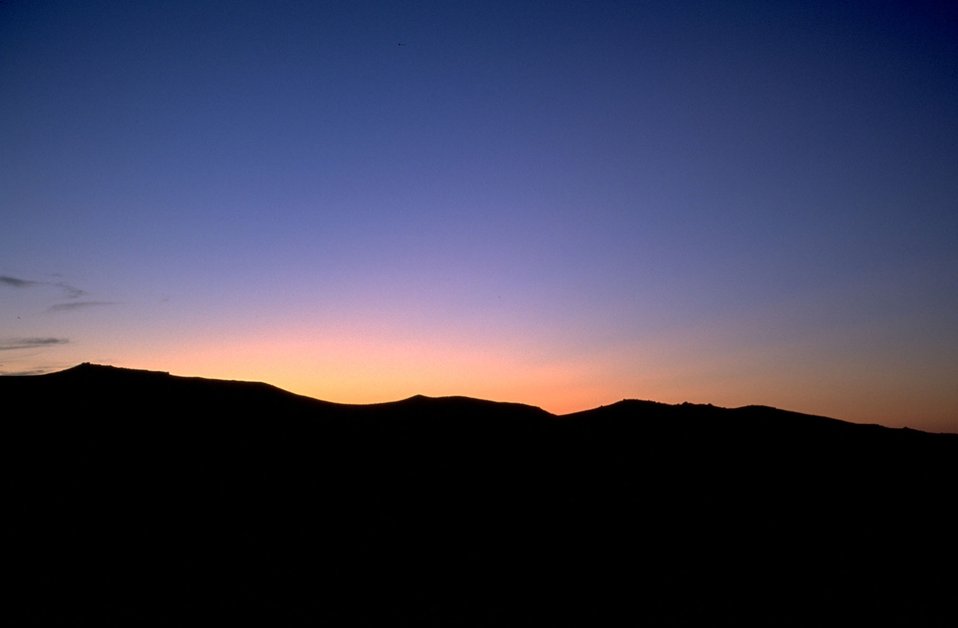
Sunset on Battle Creek Butte 35 miles north of Belle Fourche